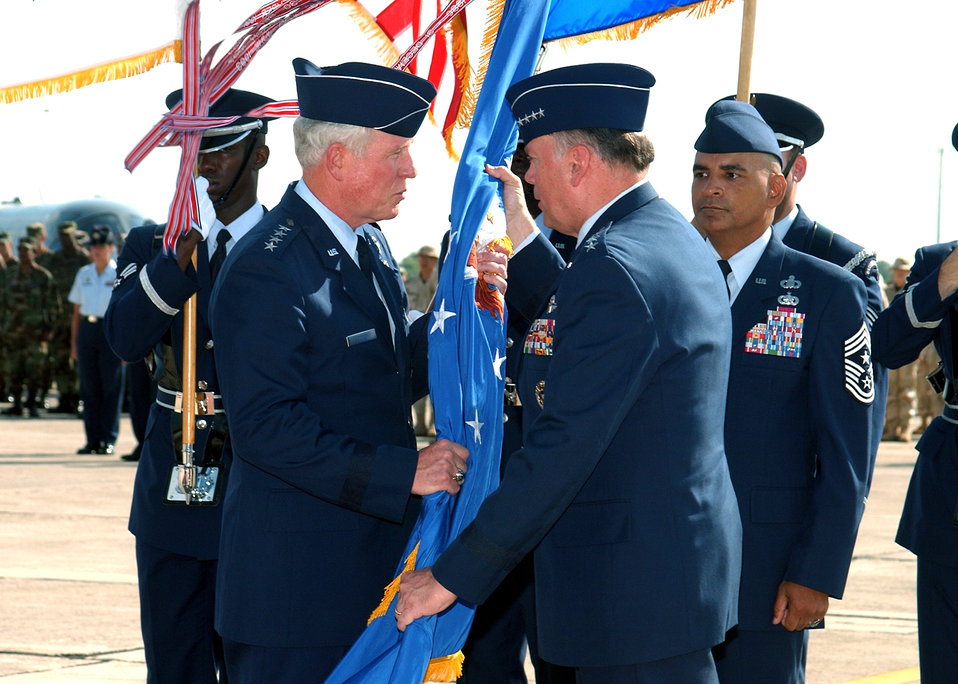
General Looney takes command of AETC

RANDOLPH AIR FORCE BASE, Texas -- Gen. William R. Looney III accepts command of Air Education and Training Command from Air Force Chief of Staff Gen. John P. Jumper here June 17. More than 1,200 people attended the change of command ceremony.